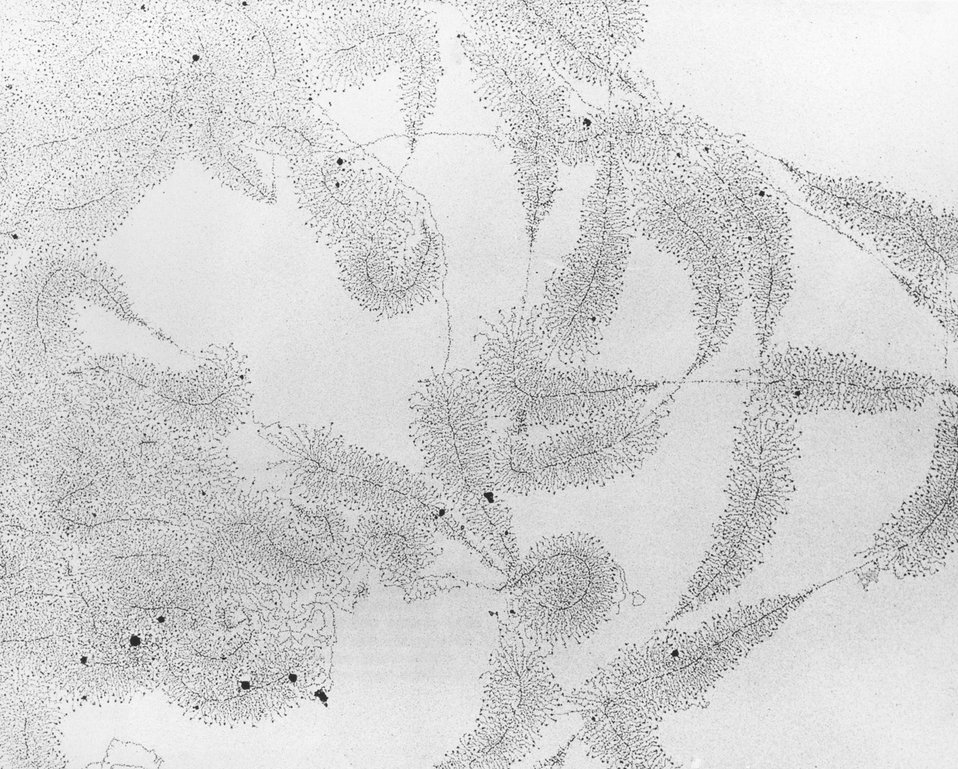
Historic electron microscope photograph of functioning genes shown about 25,000 times actual size. c. 1969